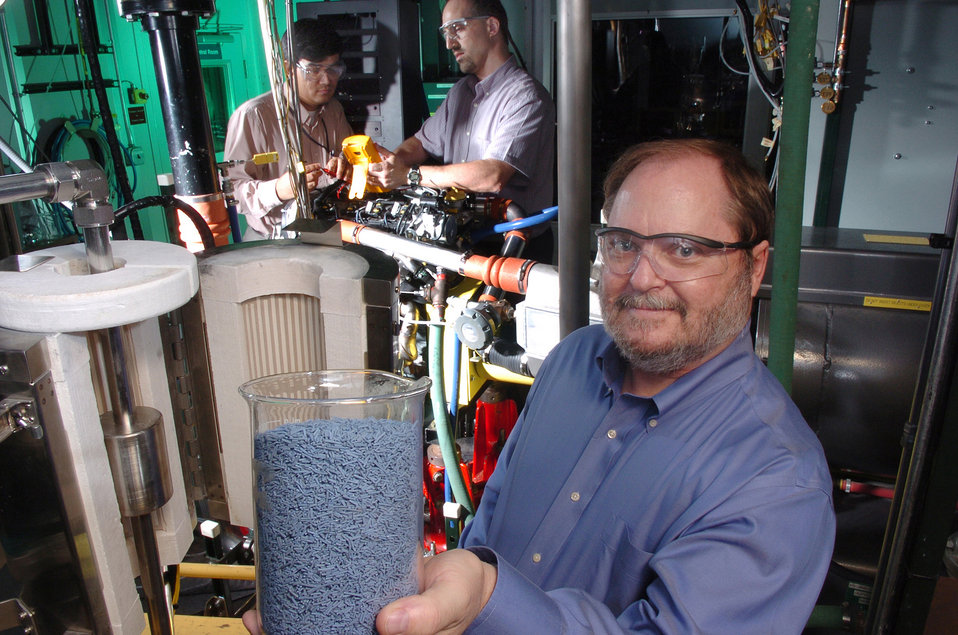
A catalyst developed by Argonne National Laboratory researchers could help diesel truck manufacturers eliminate harmful nitrogen-oxide emissions from diesel exhausts.

At ANL, the catalyst is currently being tested in the from of extrudates. Next to it subject the catalyst to testing using real diesel exhaust. These tests will take place soon at ANL's Diesel Engine Test Facility. The catalyst will be placed in the reactor at the left which is then connected to the diesel engine pictured in the background. Researchers envision manufactures placing ceramic catalytic reactors in the exhaust pipes, where they are among difficult pollutants to eliminate from diesel exhaust.